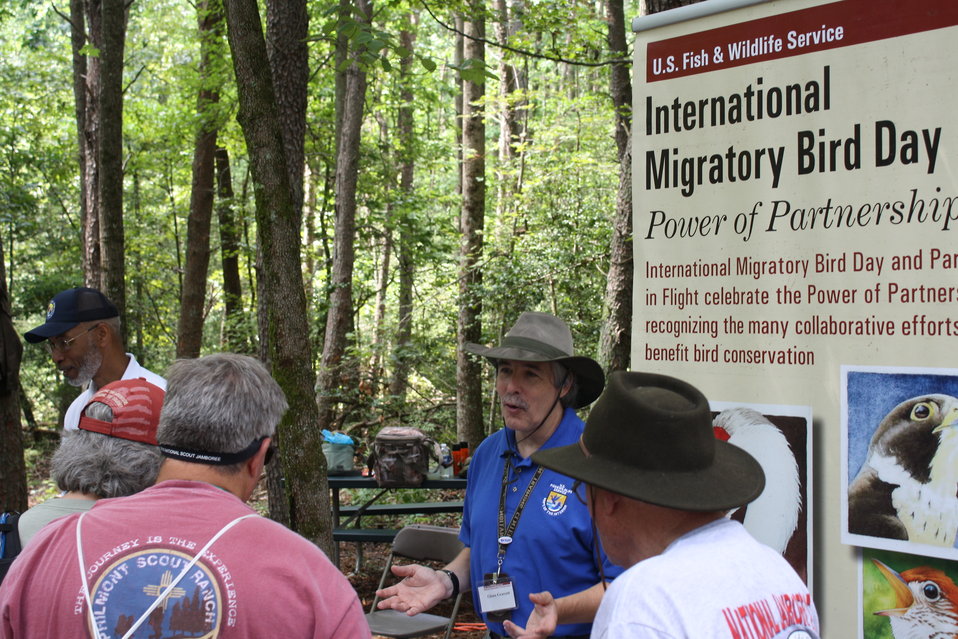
Boy Scout Jamboree 2010